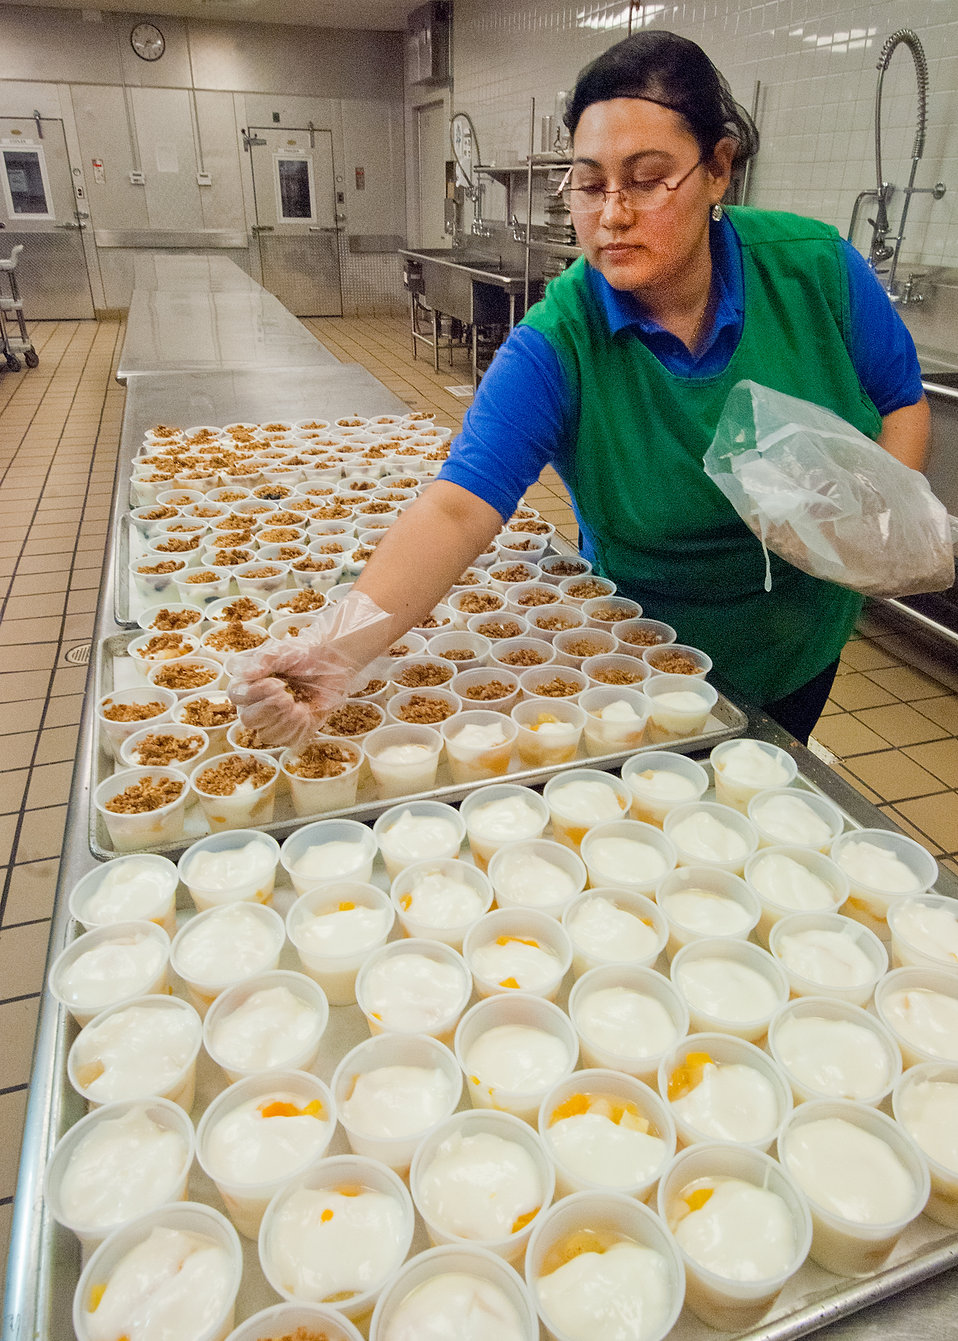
Protein products, like Greek-style yogurt, are consistently among the most popular items available to schools through the U.S. Department of Agriculture (USDA) foods program.